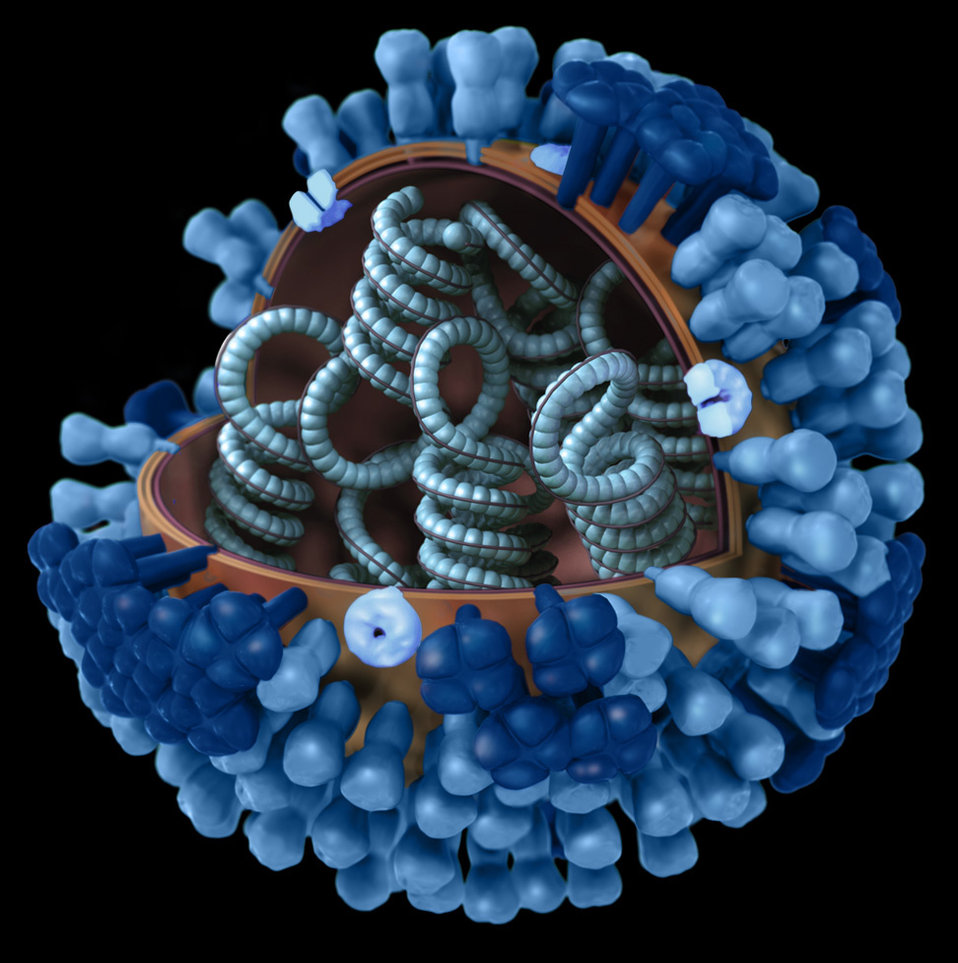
On a black background, this illustration provides a 3D graphical representation of a generic influenza virion's ultrastructure, and is not specific to a seasonal, avian or 2009 H1N1 virus. A portion of the virion's outer protein coat has been cut away, which reveals the virus' contents. See PHIL 11874 for an uncut view of the virion's exterior, and PHIL 11876, which includes a key to the virion's protein constituents.